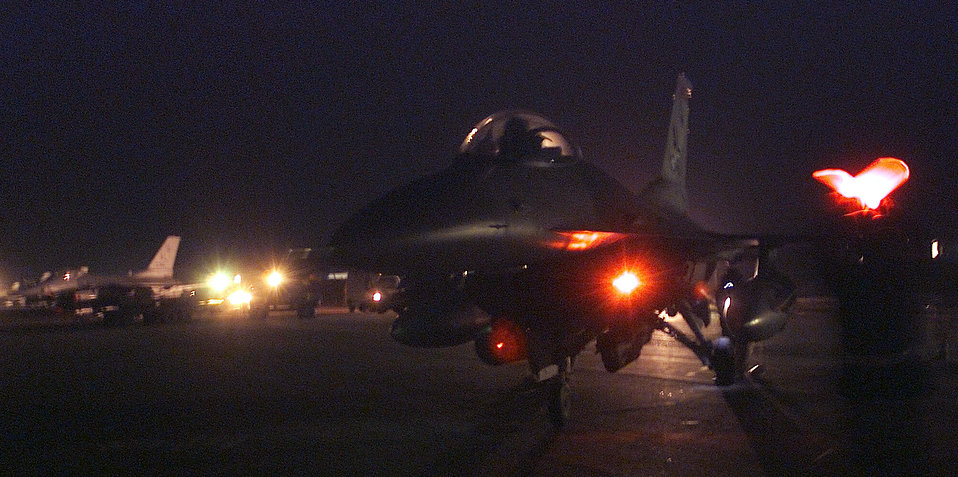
Long night

OPERATION IRAQI FREEDOM -- F-16 Fighting Falcons from the 410th Air Expeditionary Wing taxi in after a long reconnaissance mission at a forward-deployed location supporting Operation Iraqi Freedom.